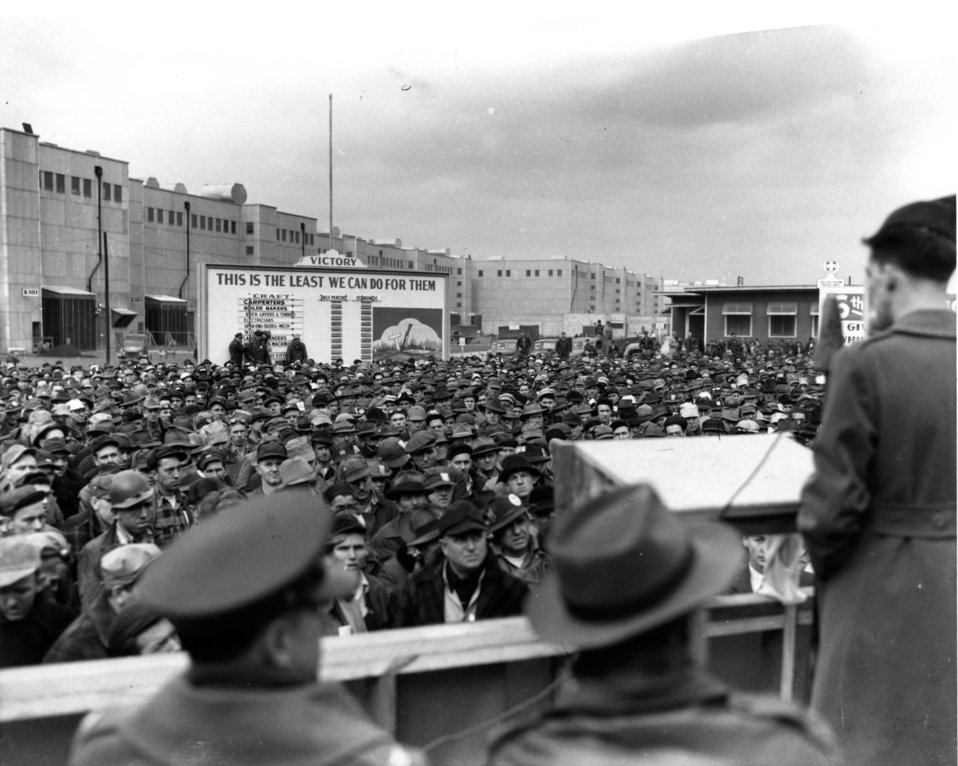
Daily Life at Oak Ridge